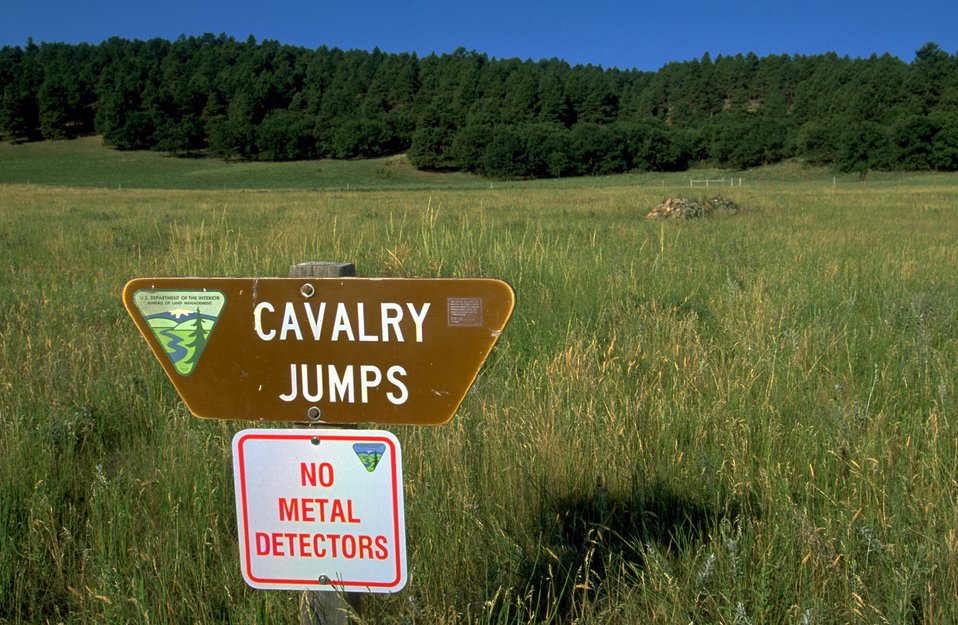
Cavalry Jumps sign at the south end of Fort Meade